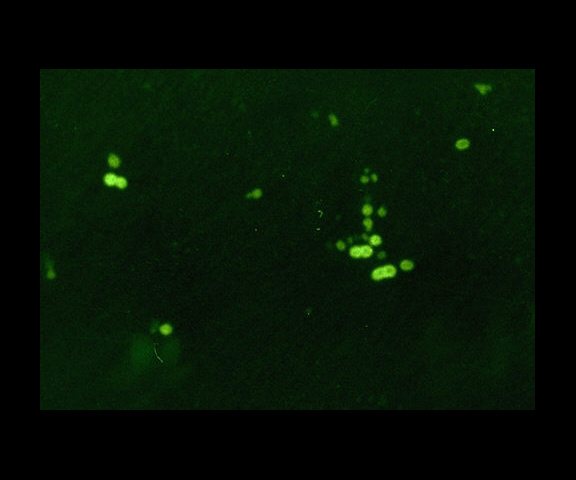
Streptococcus pneumoniae in spinal fluid after treatment with penicillin. FA stain (digitally colorized).